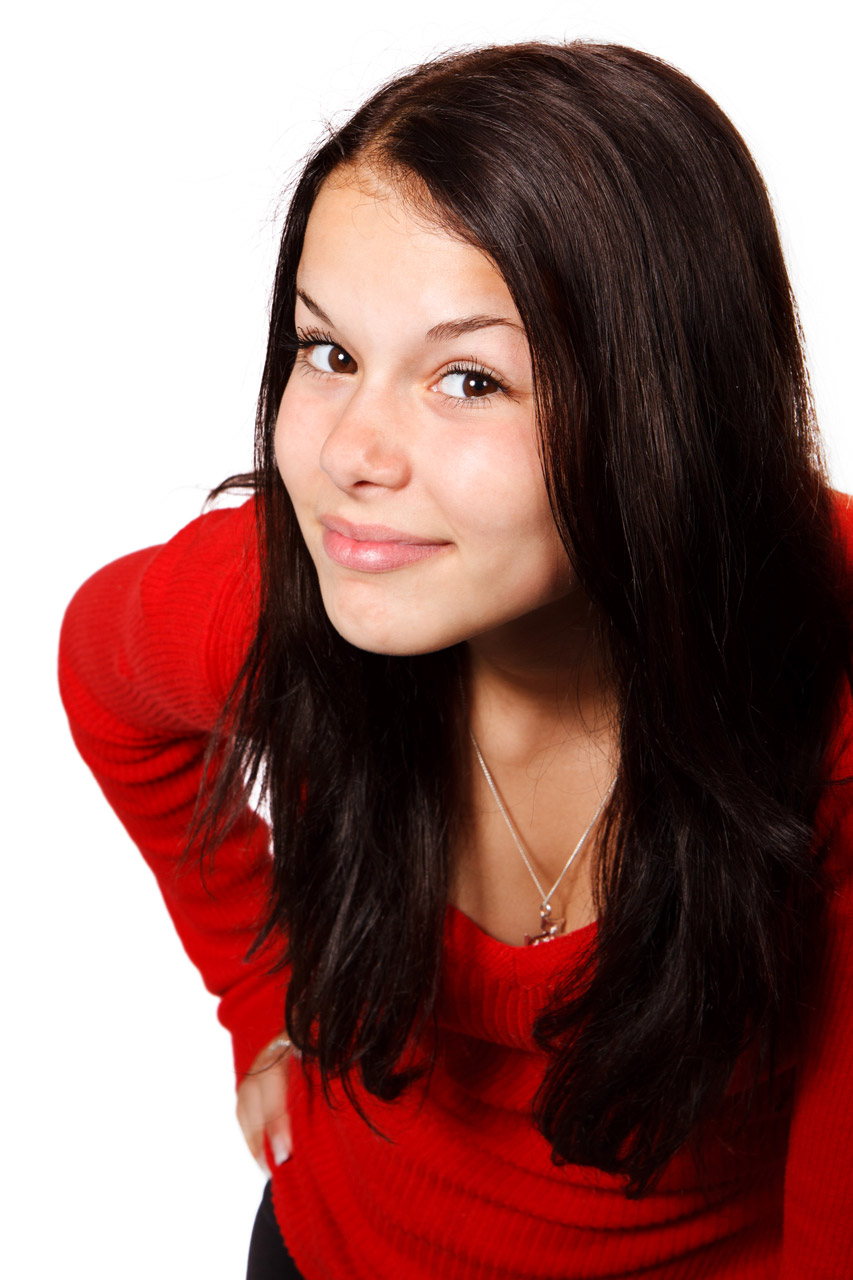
I'm listening

Young woman leaning forward and listening to something. isolated on white background.